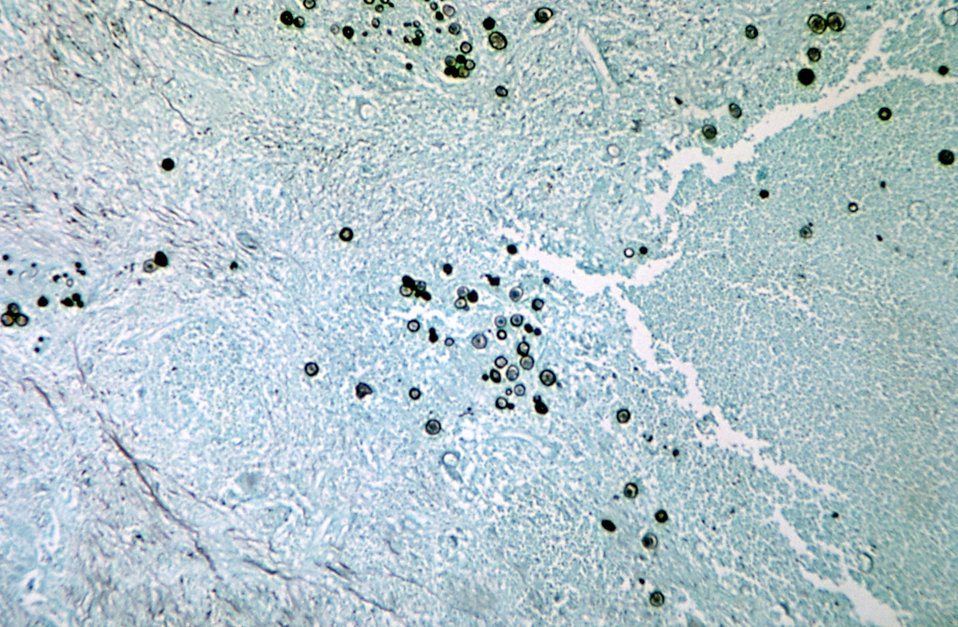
This methenamine silver stained photomicrograph reveals spherules of Coccidioides immitis fungus.